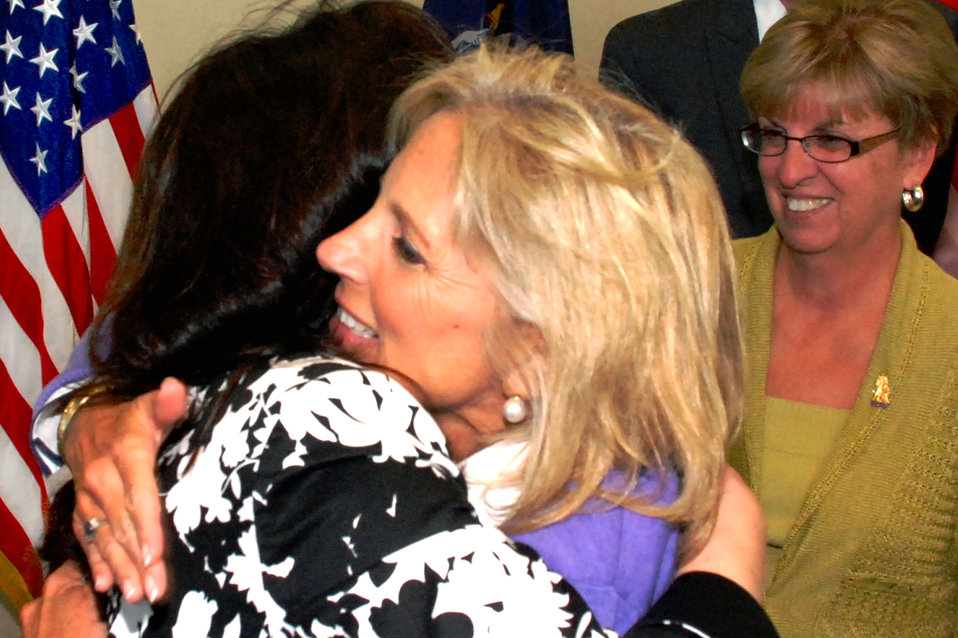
Vice president's wife urges support for military families

Dr. Jill Biden, wife of Vice President Joe Biden, hugs Theresa Martel, whose husband, Army 1st Sgt. Joseph Martel, is deployed with the New York National Guard's 206th Military Police Company in Basra, Iraq, as Susan Taluto, wife of Army Maj. Gen. Joseph J. Taluto, the New York National Guard adjutant general, looks on in Latham, N.Y., Sept. 21, 2009.